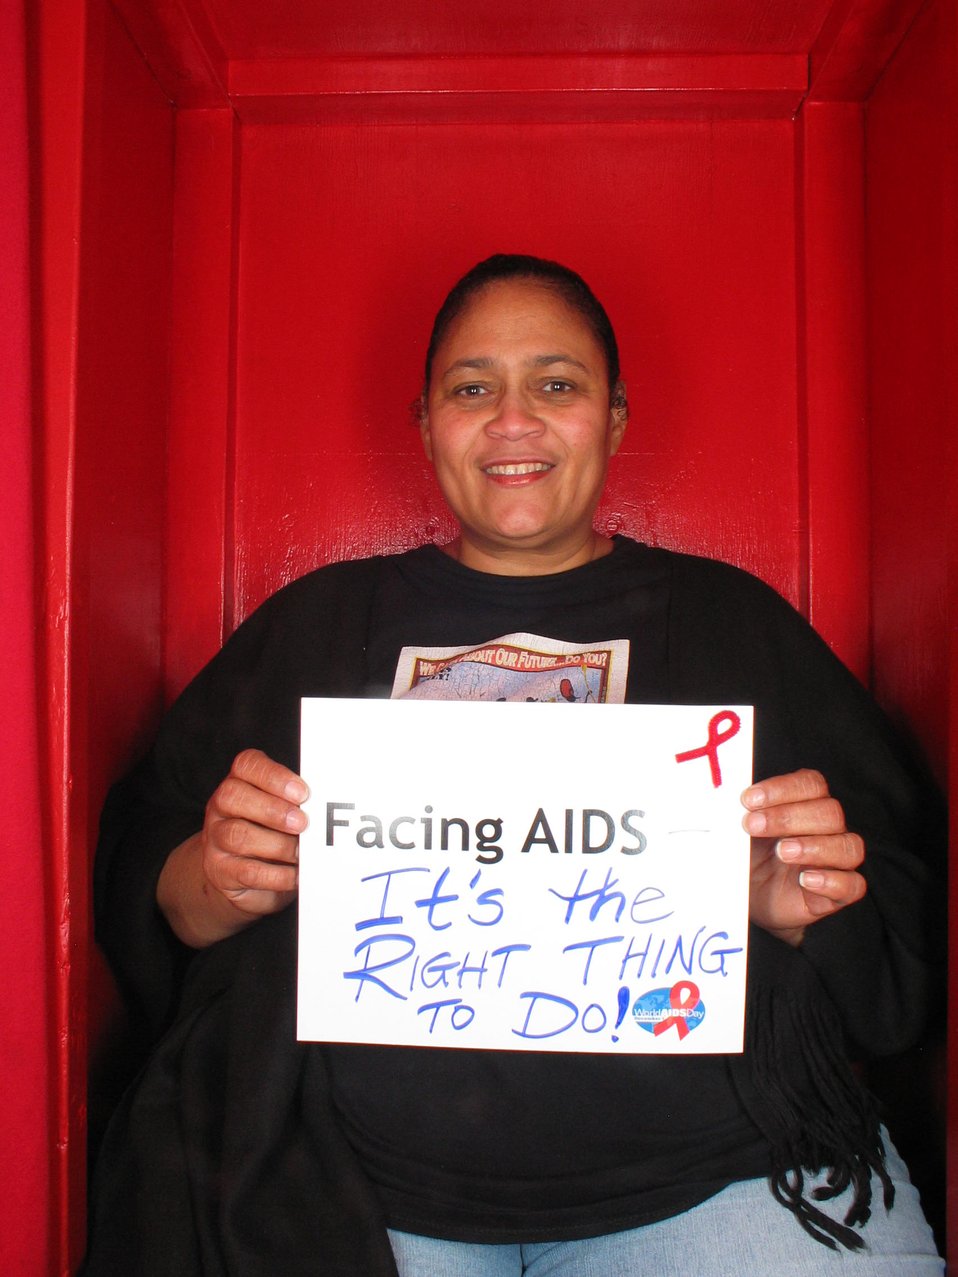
Facing AIDS It's the right thing to do!